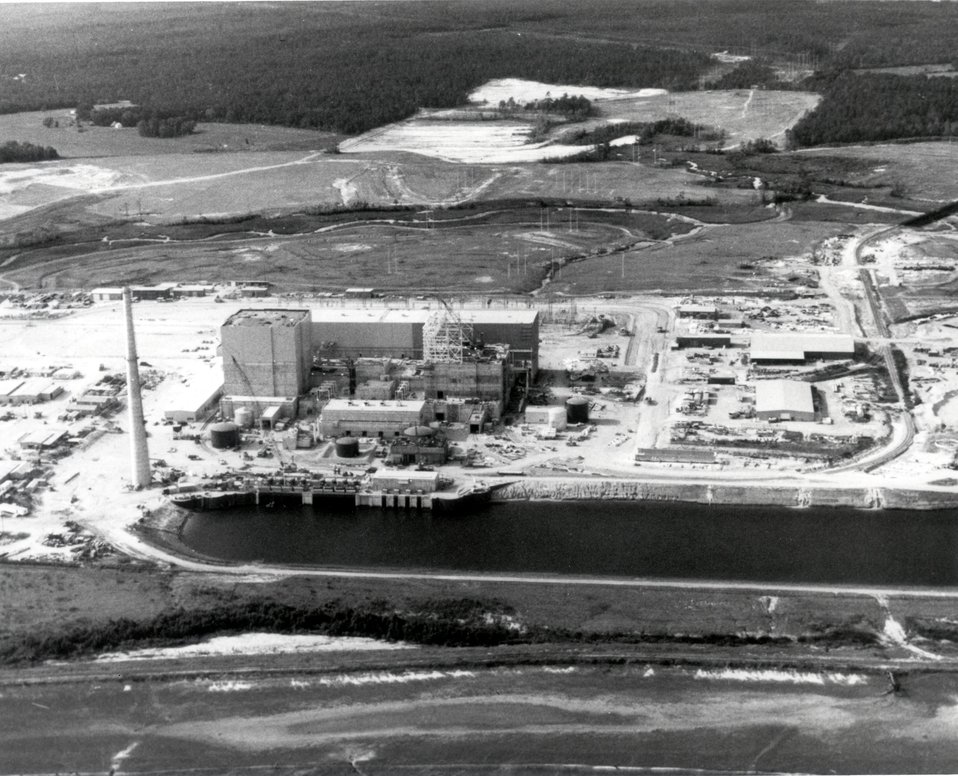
Brunswick Nuclear Plant site aerial view of the plant nearing completion.